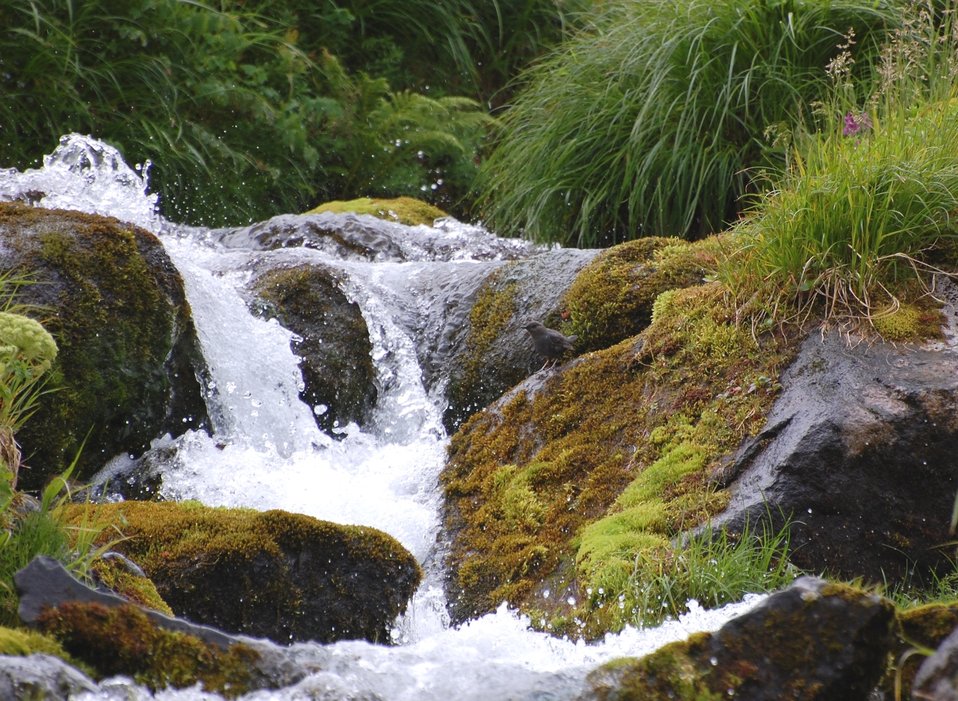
American Dipper

Wilderness near Frosty Peak, Izembek National Wildlife Refuge
Photo by Kristine Sowl,
USFWS, Public Domain